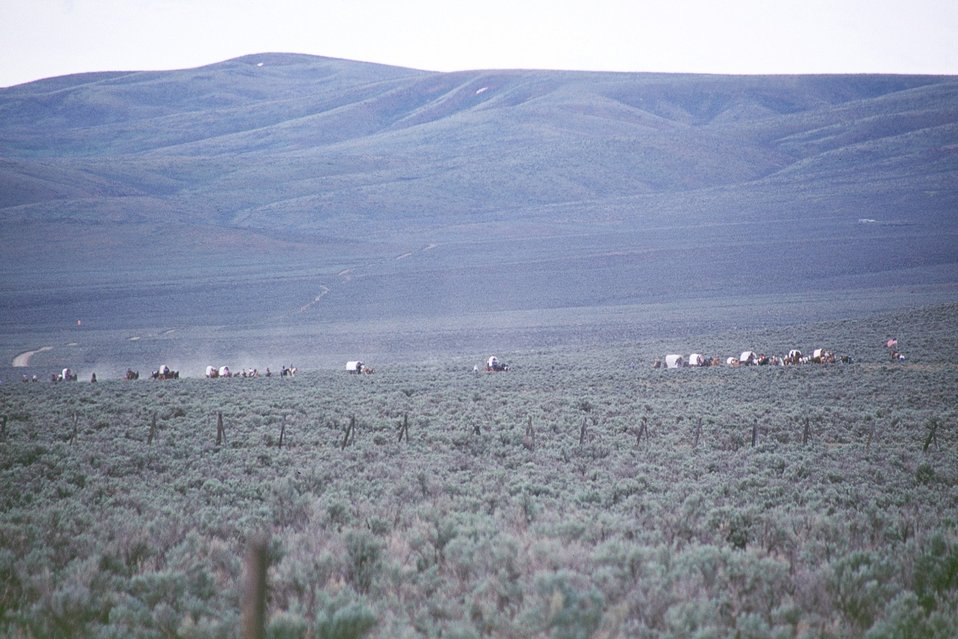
NHOTIC 10th Anniversary, wagon train reenactment. Farshot of covered wagons and pioneers on the Oregon Trail.